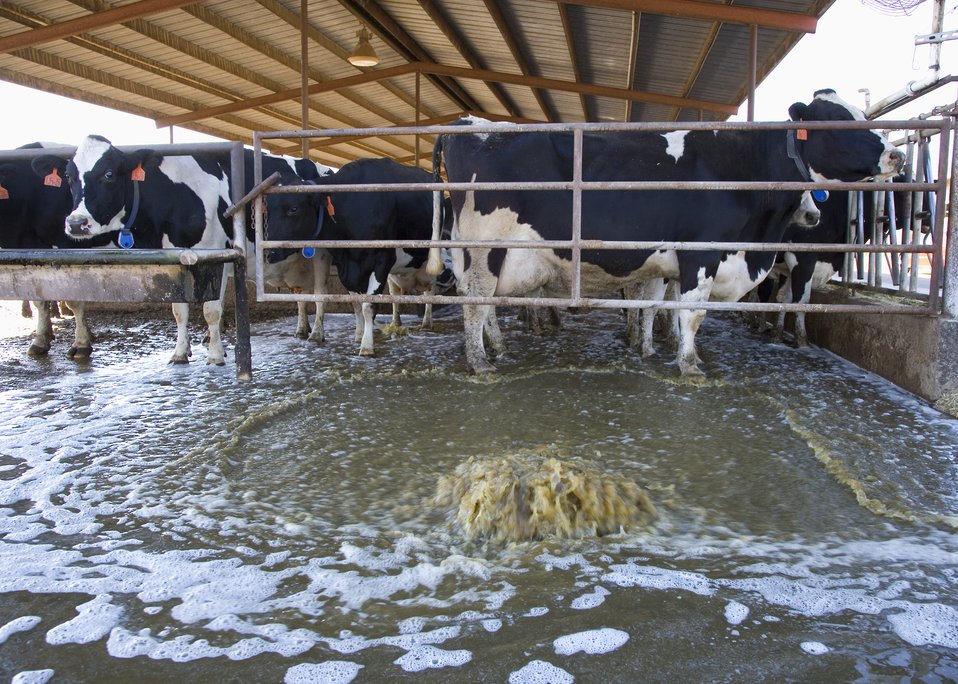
Flushing a alleyway at a dairy in California.